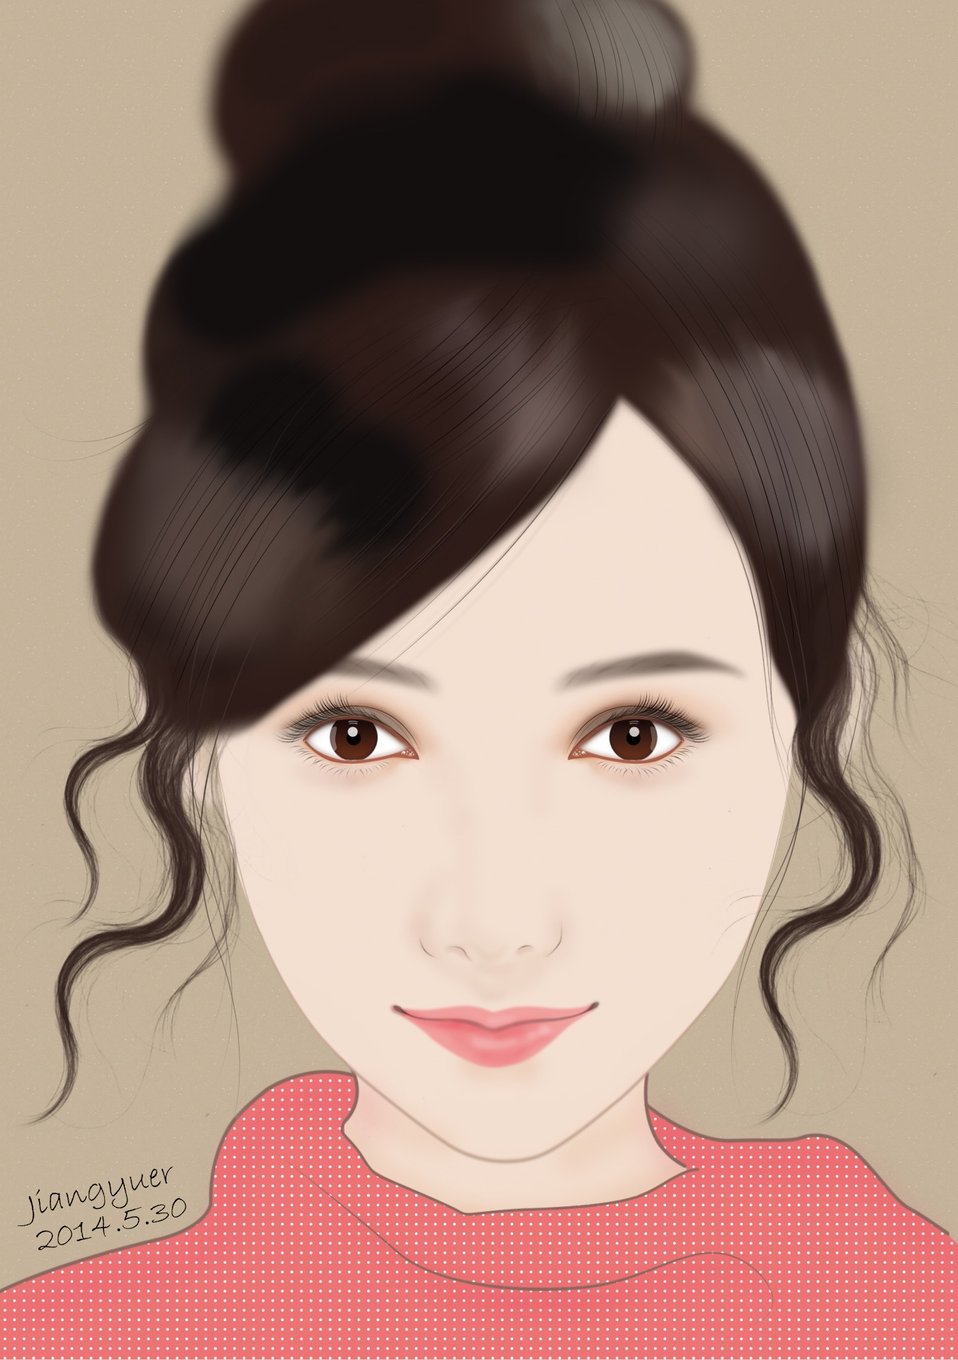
Mouse painted beauty

Computer mouse painted a beautiful hand-painted beauty.